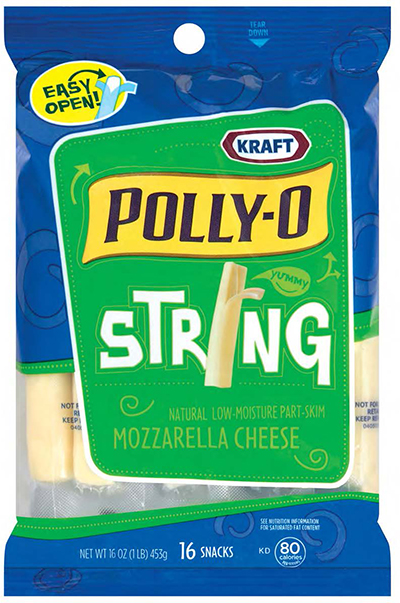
RECALLED – Cheese

October 25, 2013 – Product Recall – Kraft Voluntarily Recalls Some Varieties of Kraft And Polly-O String Cheese And String Cheese Twists Due to Premature Spoilage.